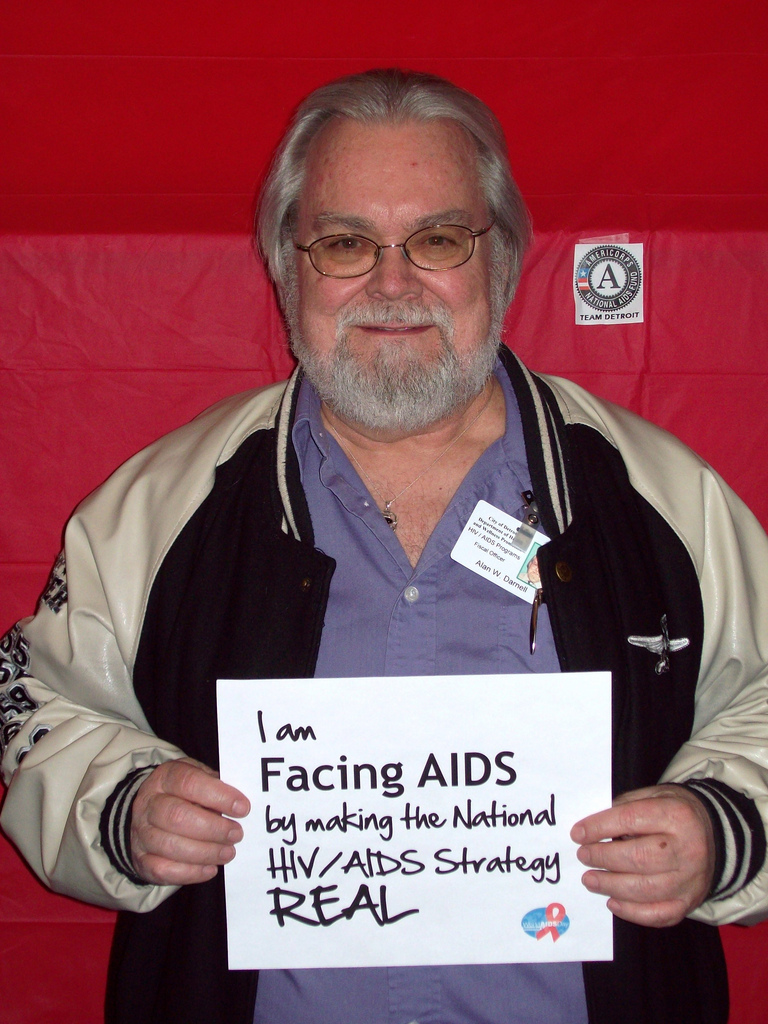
We are Facing AIDS through NHAS-18